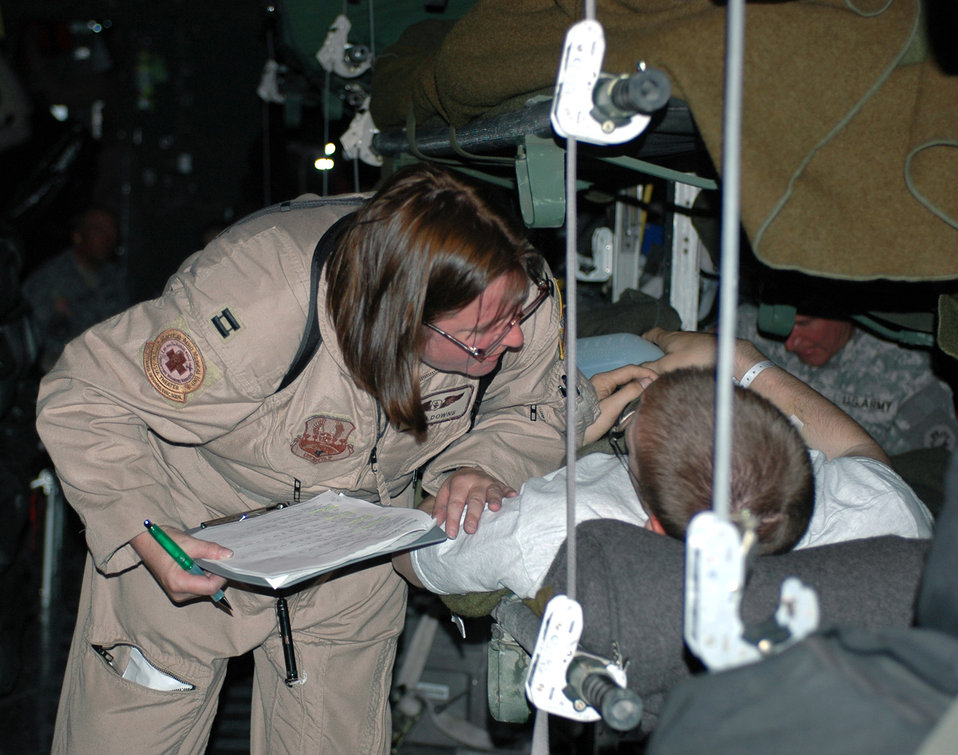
Aeromedical teams provide comfort, care in the air

Capt. Rhea Downs cares for a wounded servicemember June 13 at Balad Air Base, Iraq. Captain Downs is deployed from Pope AFB, N.C., and is assigned to the 379th Expeditionary Aeromedical Evacuation Squadron.